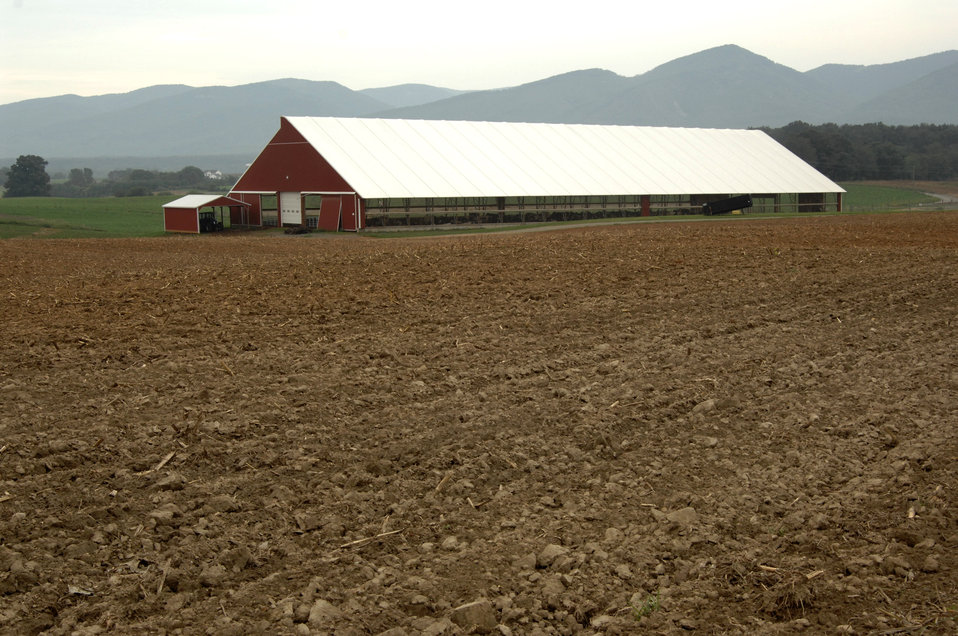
A turkey coop sits in field on farm in Rockingham County, Virginia on September 9, 2008.